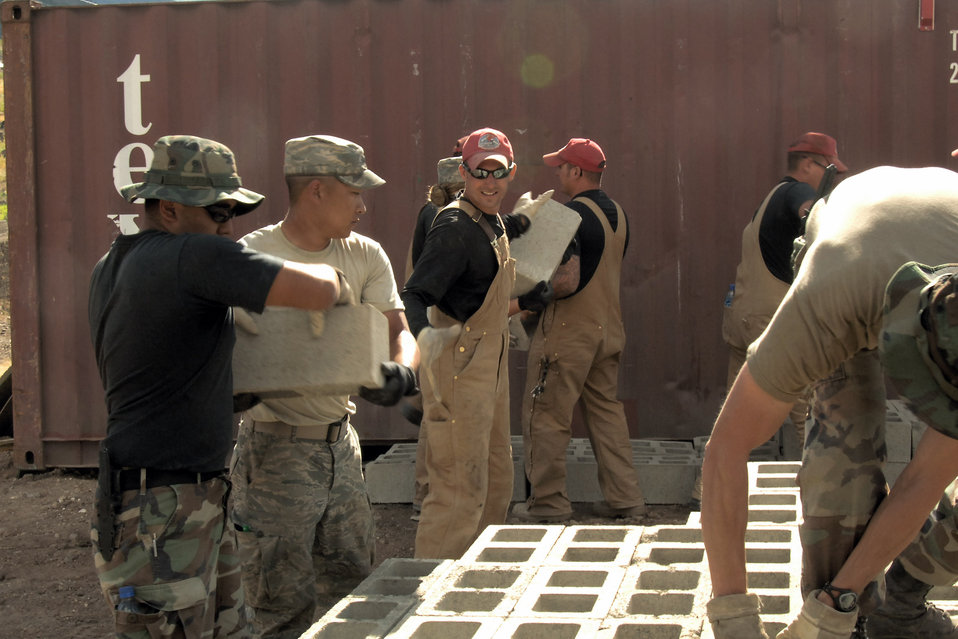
New Horizon Peru

Airmen assigned to Task Force New Horizon-Peru 2008 stack cement blocks June 3 to begin the construction of a clinic in Yanama, Peru, in support of New Horizons Peru 2008, a humanitarian event that benefits thousands of Peruvians. Nearly 300 members from the U.S. military came together to provide Peruvians with new schools, clinics and water wells.